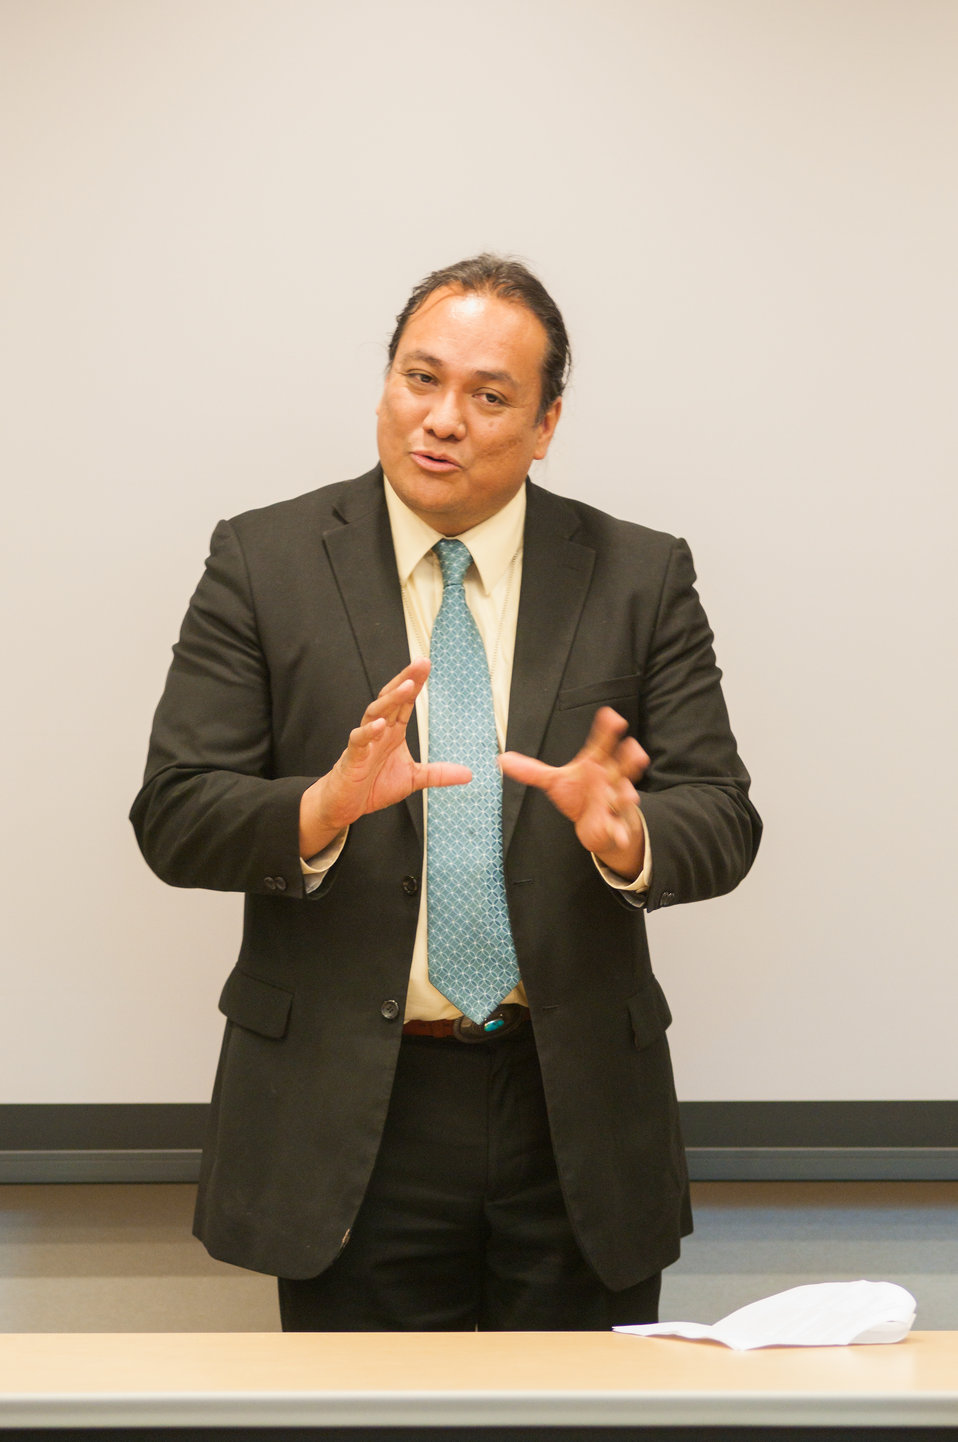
U.S. Department of Agriculture (USDA) 1994 Tribal Land Grant College's and University's Program Director Lawrence Shorty offers opening remarks at the USDA 2013 Land-Grant Development Tribal Fellows Program held in Washington, D.C. on Monday, Jun. 03, 2013.